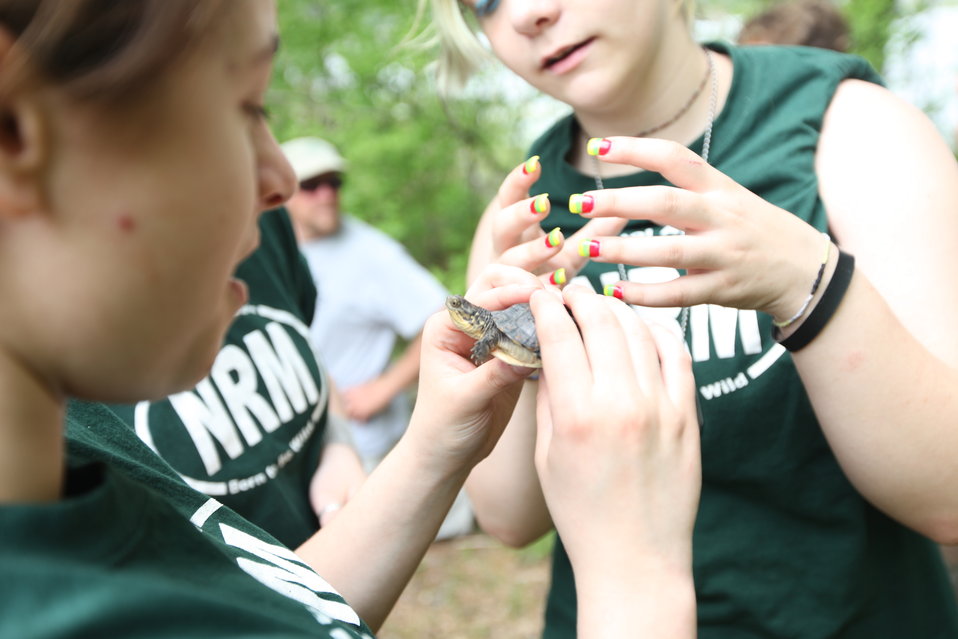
Kids Holding Turtle

Blanding's turtle release, Assabet River, MA.